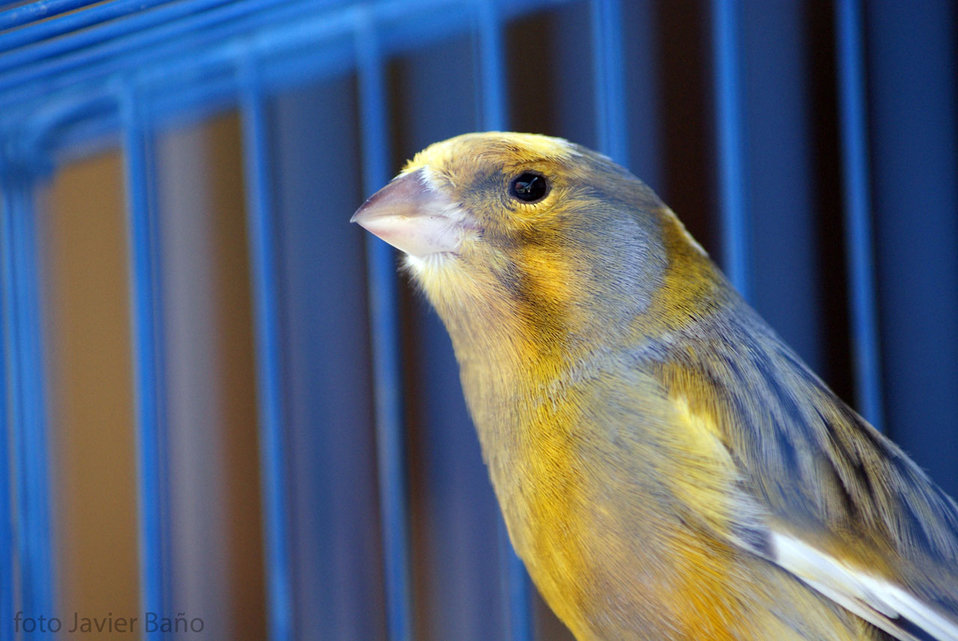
Canary

Speed street canary.